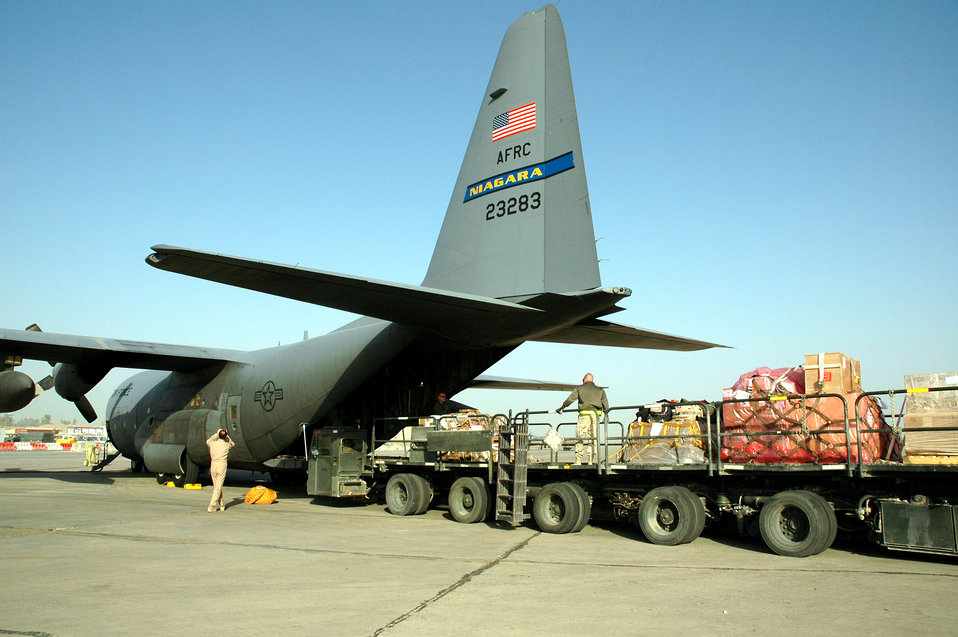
Operation Iraqi Freedom

BAGHDAD, Iraq (AFPN) -- Airmen unload cargo in at the airport here brought in on C-130 Hercules mission in Iraq.